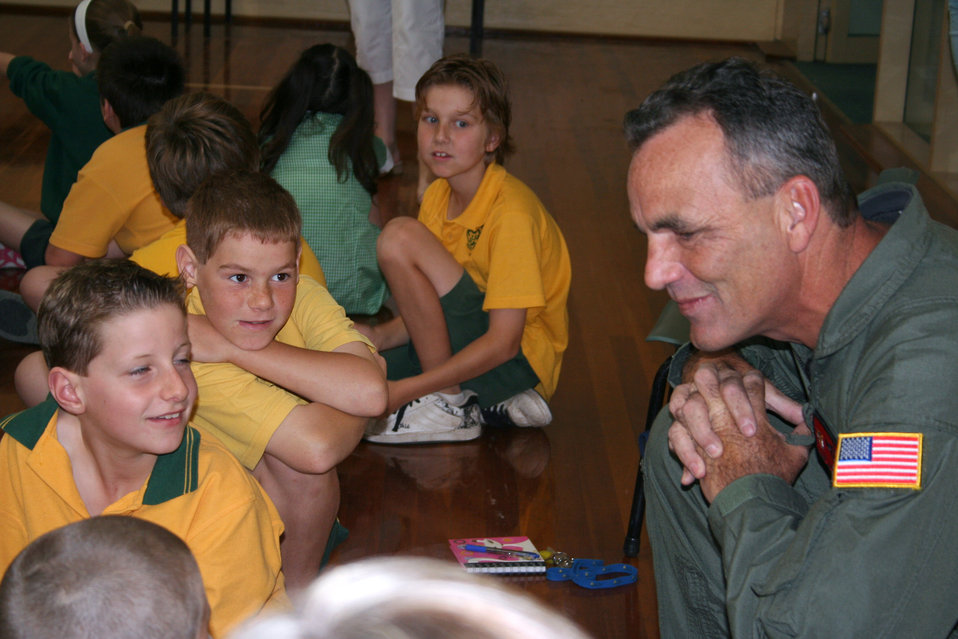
Airmen visit Australian primary school

Master Sgt. Chuck Fish talks with children from Lara Primary School in Victoria, Australia, March 22 about his experiences in the Air Force. Sergeant Fish is the operations superintendent for the 535th Airlift Squadron at Hickam Air Force Base, Hawaii.